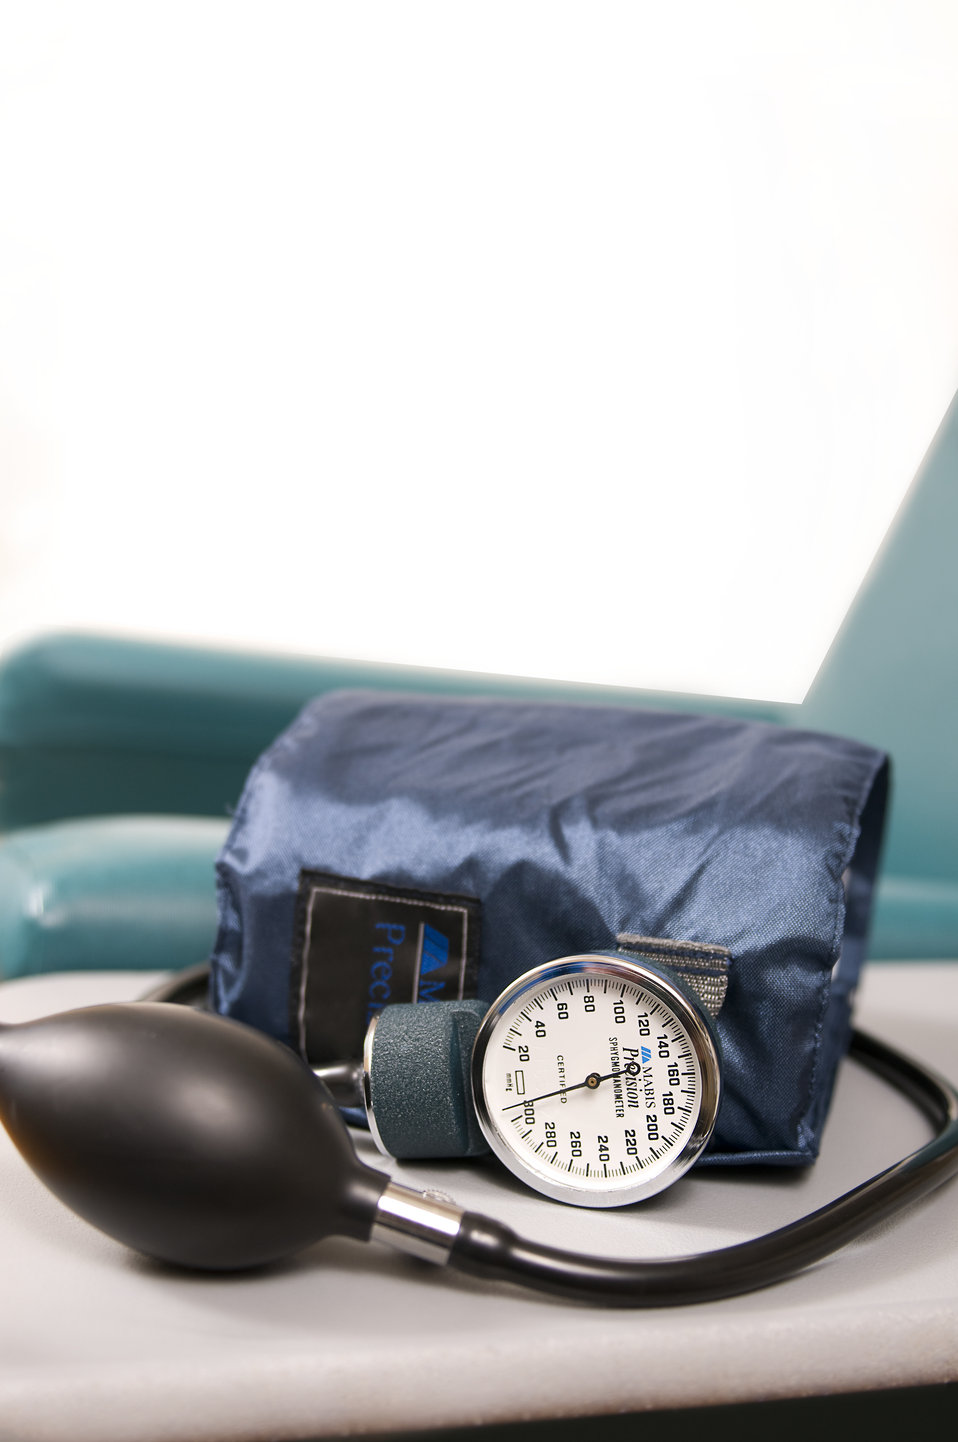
In order for a healthcare provider to measure a patient's blood pressure a sphygmomanometer will be used. Pictured here, this device consists of a pressurized cuff that encircles the patient's upper arm, and a monitor, which indicates changes in pressure within the cuff.